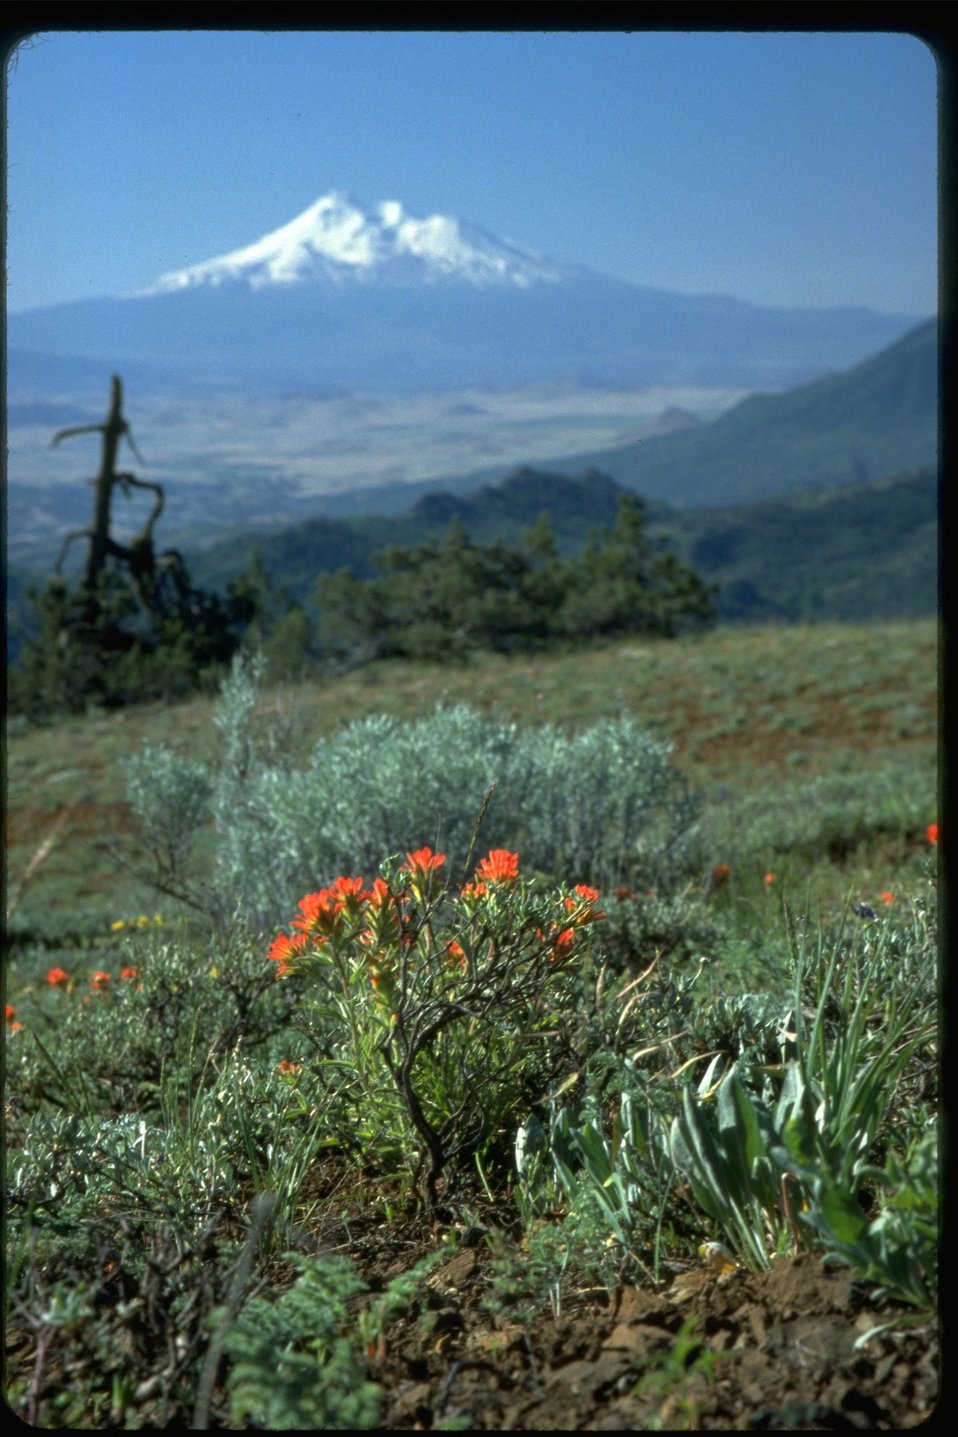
Telephoto shot of Mt. Shasta with Indian Paintbrush wildflowers in foreground, Cascade-Siskiyou National Monument (CSNM).